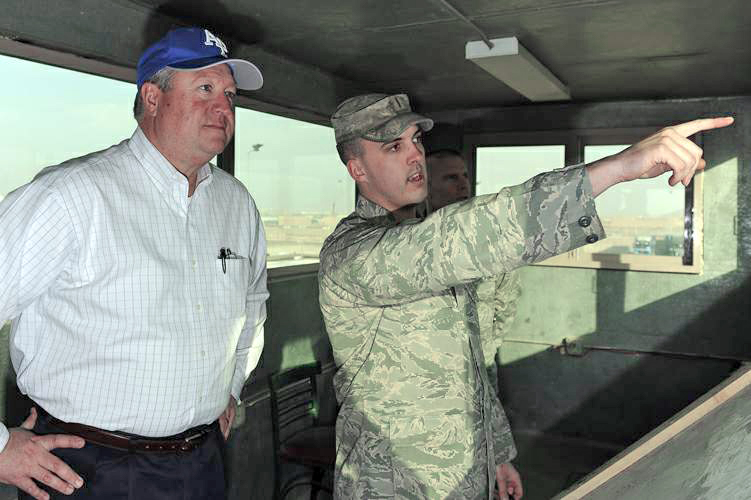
Air Force secretary: Importance of joint mission can't be stressed enough in Afghanistan

Secretary of the Air Force Michael Donley is briefed by 2nd Lt. Josh Frizzell on entry control point procedures Feb. 2, 2010, at Bagram Airfield, Afghanistan. Secretary Donley was in Afghanistan to monitor the training efforts of the Afghanistan National Army Air Corps and to meet with Airmen. Lieutenant Frizzell is assigned to the 455th Expeditionary Security Forces Squadron.